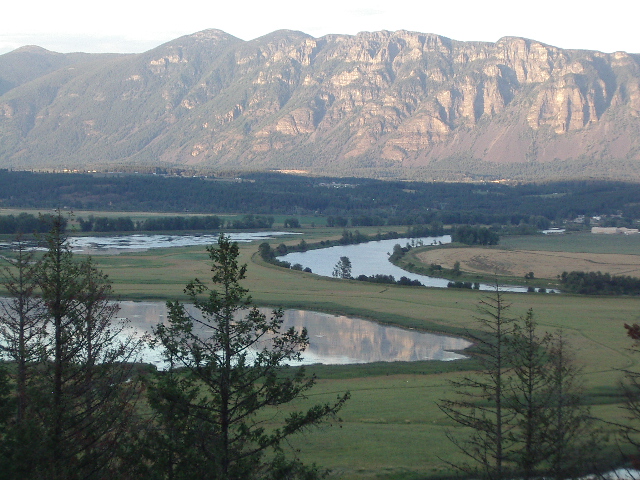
Kootenai River from Boundary Connections Idaho

A view of the Kootenai River from the Boundary Connections project in Idaho.